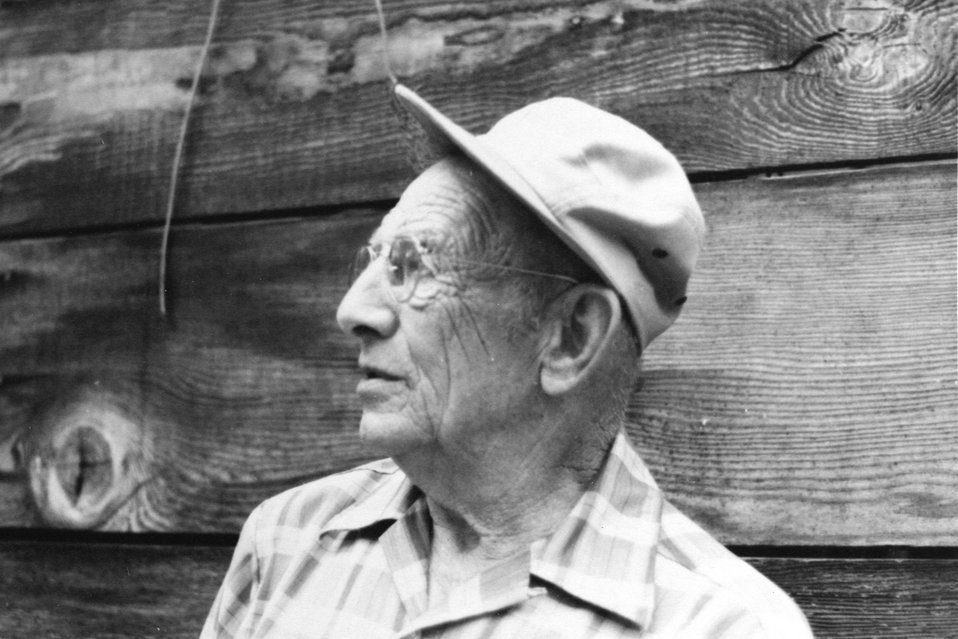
Lou Martin